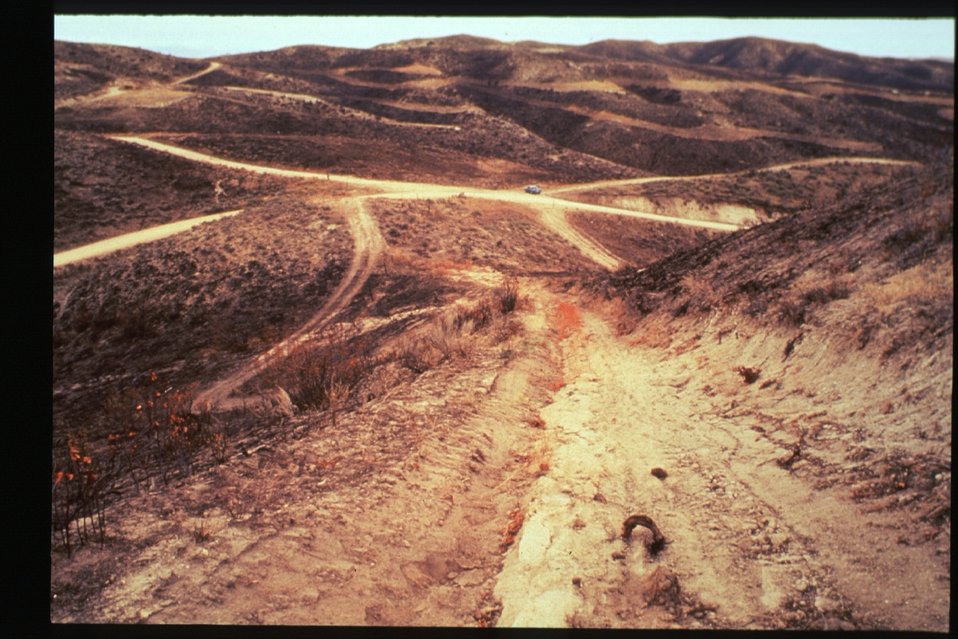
Boise Foothills Fire Danskin Mountains and South Fork of Boise River Burnt area Four River Field Office LSRD Lower Snake River District